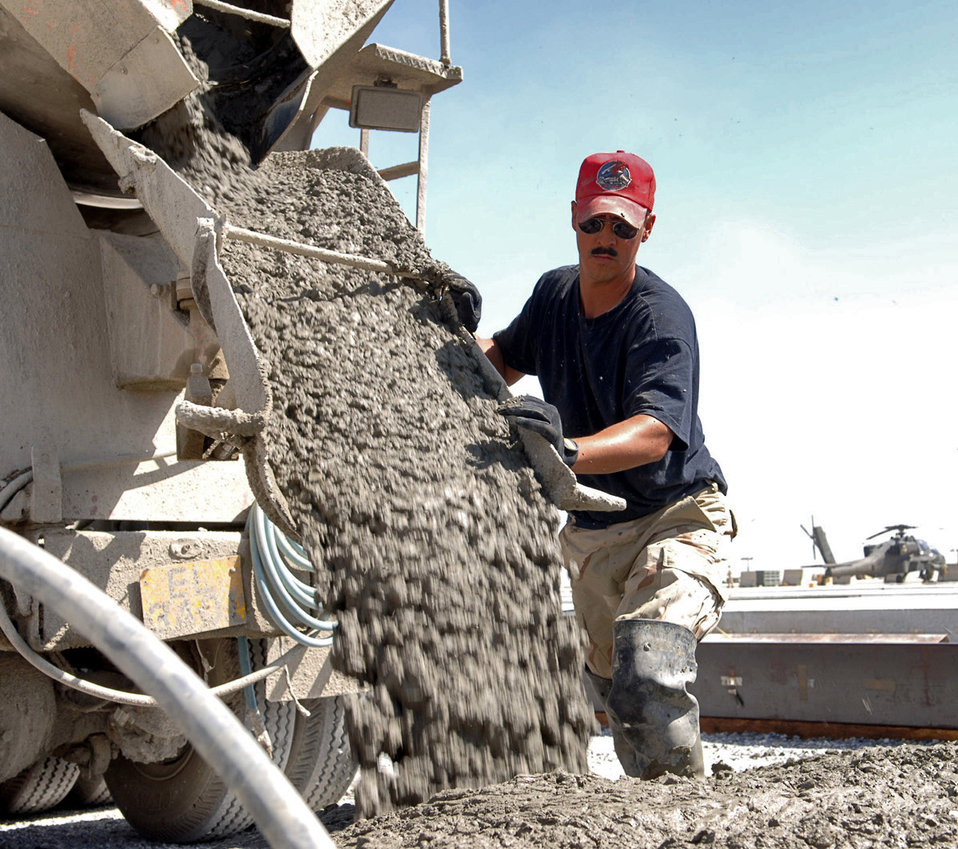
Operation Enduring Freedom

BAGRAM AIR BASE, Afghanistan -- Staff Sgt. Joel Kennedy directs concrete as it is poured onto the newest section of the aircraft parking ramp here. The 1st Expeditionary Red Horse Group from Nellis Air Force Base, Nev., is adding an additional 60,000 square meters of aircraft ramp space as part of a $4.4-million airfield upgrade project. Sergeant Kennedy is a pavement and equipment craftsman with the 1st ERHG.